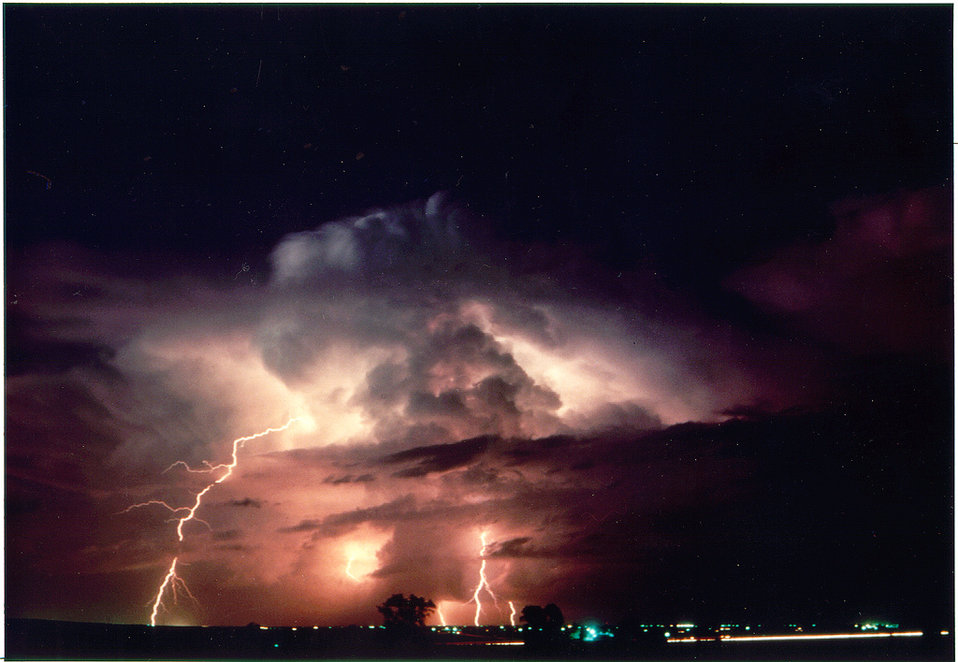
Pacific Northwest National Laboratory conducts studies on atmospheric and climate change.